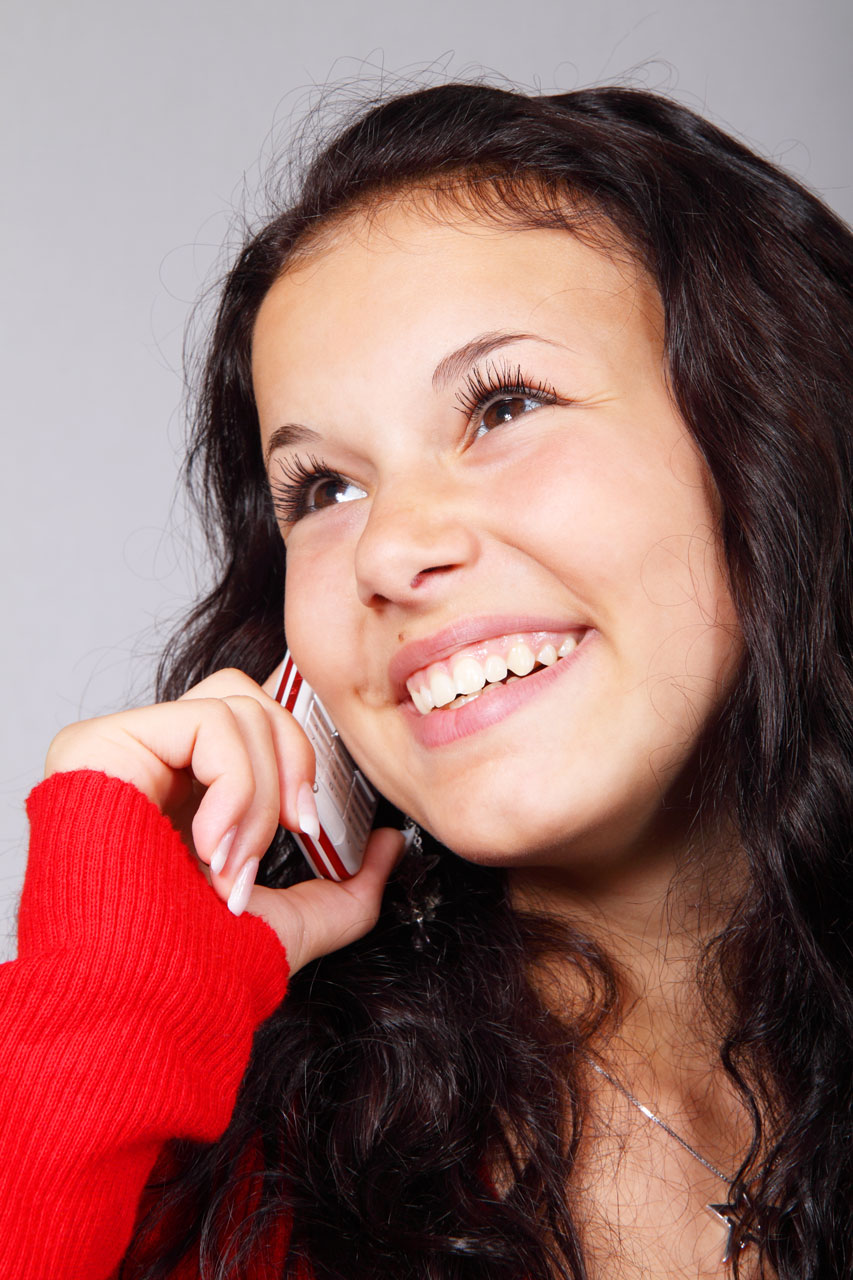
Woman talking on phone

Young woman talking on the phone.